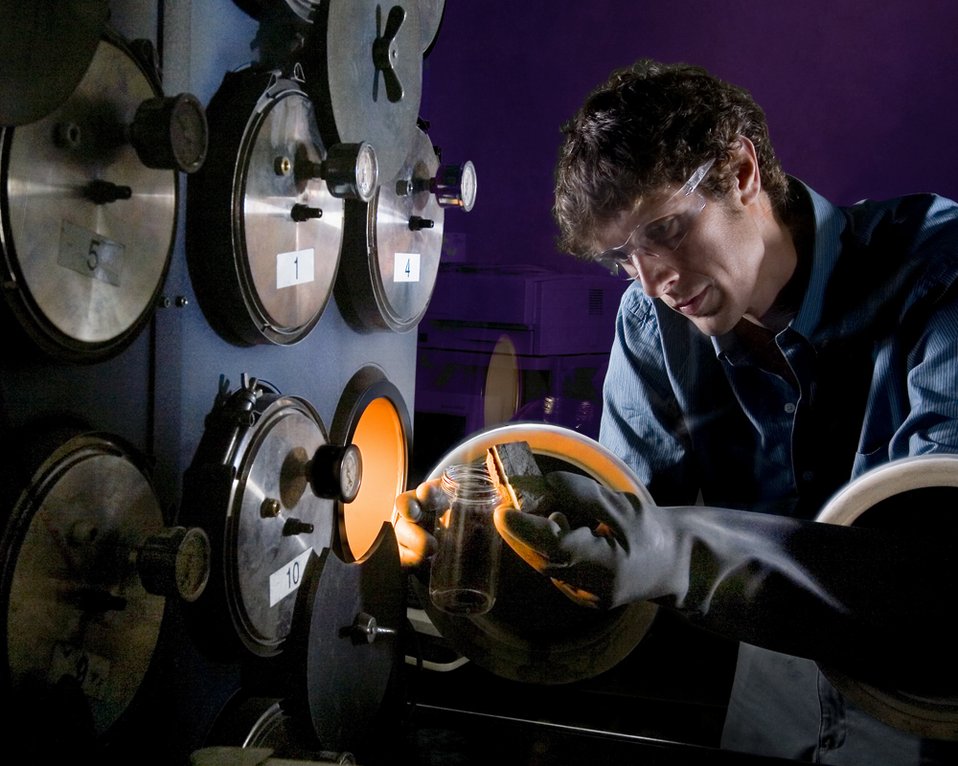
Dan Derick handles a complex metal hydride being considered for storage of hydrogen at Sandia National Laboratory.

Sandia is developing computational models to better predict the behavior of materials that would be used to store hydrogen in automotive fuel tank systems. Advanced metal hydrides and other chemical being considered for hydrogen storage absorb and hold hydrogen within their molecular structures and release it when subjected to heat. Hydrides can react when exposed to air and moisture. Sandia is one of the six institutions that received DOE funding for applied hydrogen storage research.